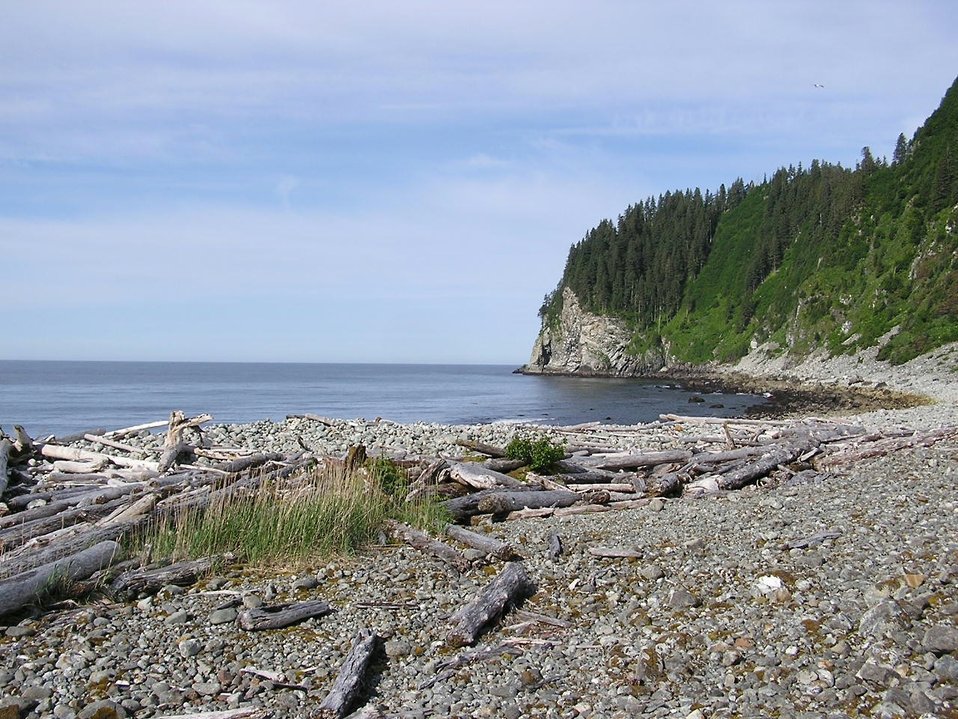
Elrington Point, Prince William Sound area.